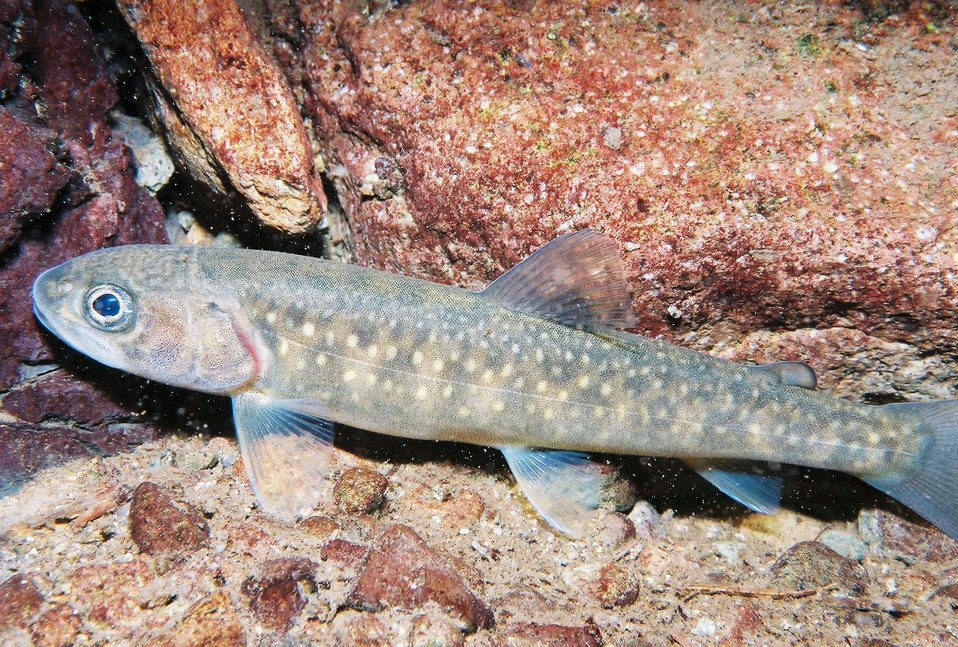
Juvenile Bull Trout